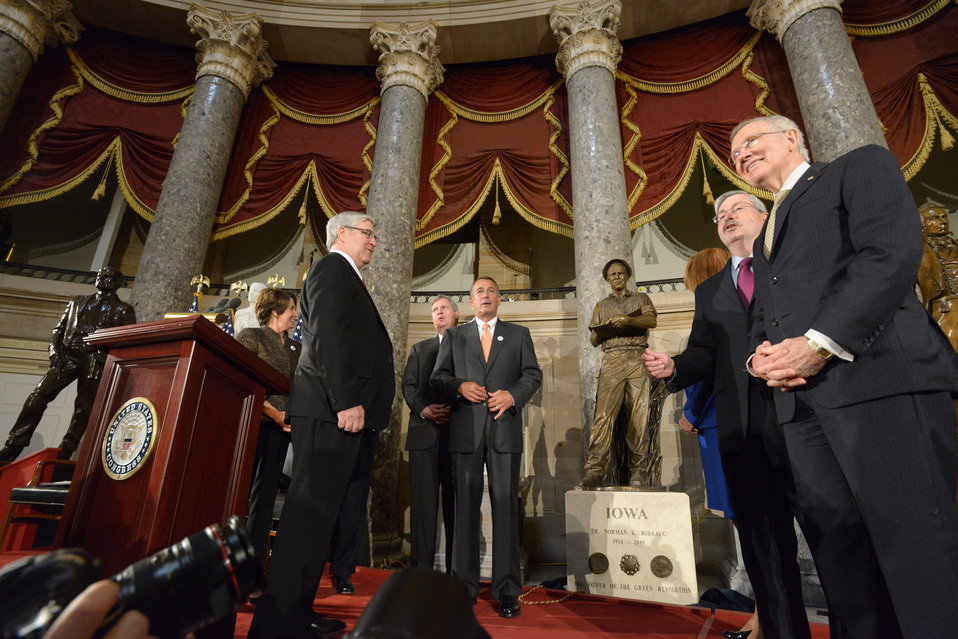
The Dr. Norman E. Borlaug statue is unveiled in the National Statuary Hall at the U. S. Capitol in Washington, D.C. on Tuesday, Mar. 25, 2014. (L to R Mr. Bill Borlaug (son of Dr. Borlaug), Minority Leader of the House of Representatives Nancy Pelosi , Agriculture Secretary Tom Vilsack, Speaker of the House of Representatives John Boehner, Iowa Governor Terry Branstad and Majority Leader of the U.S. Senate Harry Reid).